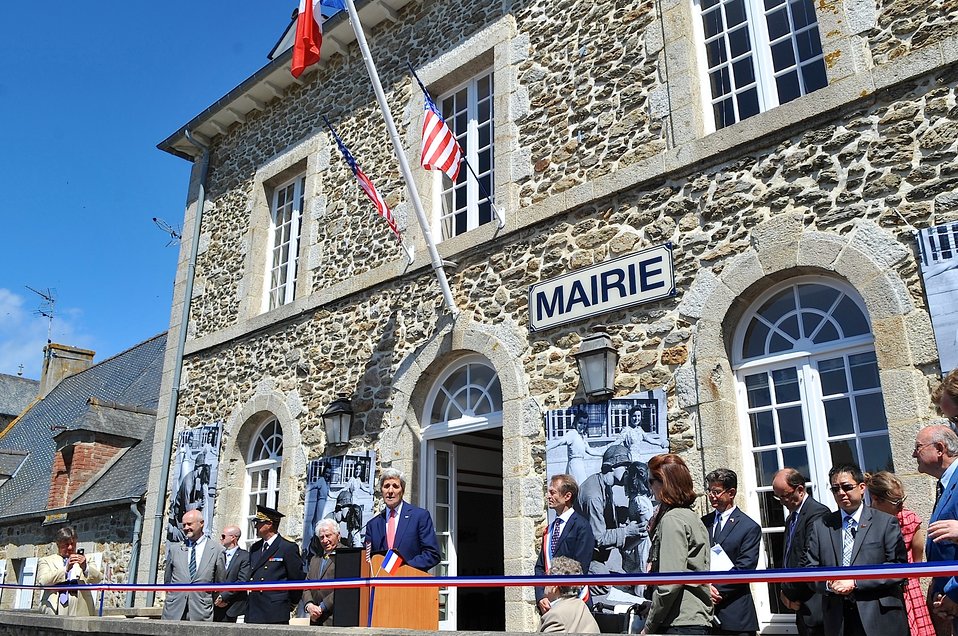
Secretary Kerry Salutes U.S.-French Alliance During Speech in Saint Briac

U.S. Secretary of State John Kerry salutes the endurance of the U.S.-French alliance during a speech in Saint Briac, France, on June 7, 2014. In the speech, he also thanked the residents of Saint Briac for saving his family's possessions after their home was destroyed by the Nazis at the end of World War II.